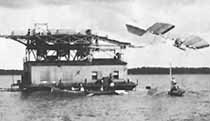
Aerodrome Tests

EARLY YEARS -- By the end of 1893, Samuel P. Langley was conducting flight tests from atop a houseboat moored near Quantico on the Potomac River. After numerous failures, on May 6, 1896, his luck changed. He launched Aerodrome Number 5 out over the Potomac. It rose gracefully in a sweeping circle. It circled until its fuel gave outand then settled gently into the water.